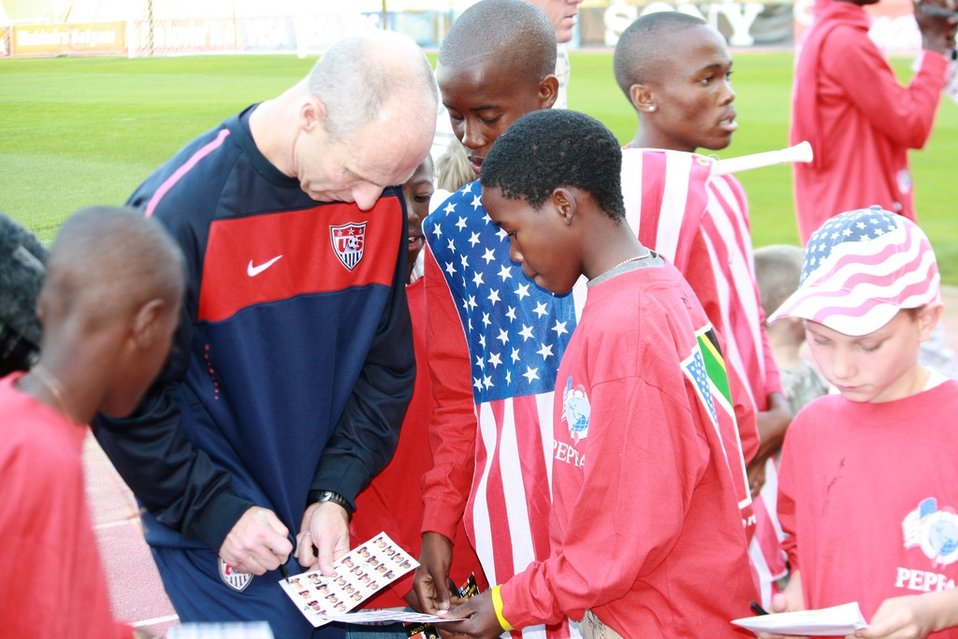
U.S. National Soccer Team Members Signs His Autograph

A member of the U.S. National Soccer Team signs an autograph for a South African student at the U.S. National Soccer Team's open practice session at the Pliditch Stadium in Pretoria, South Africa, on June 6, 2010. The U.S. National Soccer Team is preparing for the 2010 World Cup in South Africa.